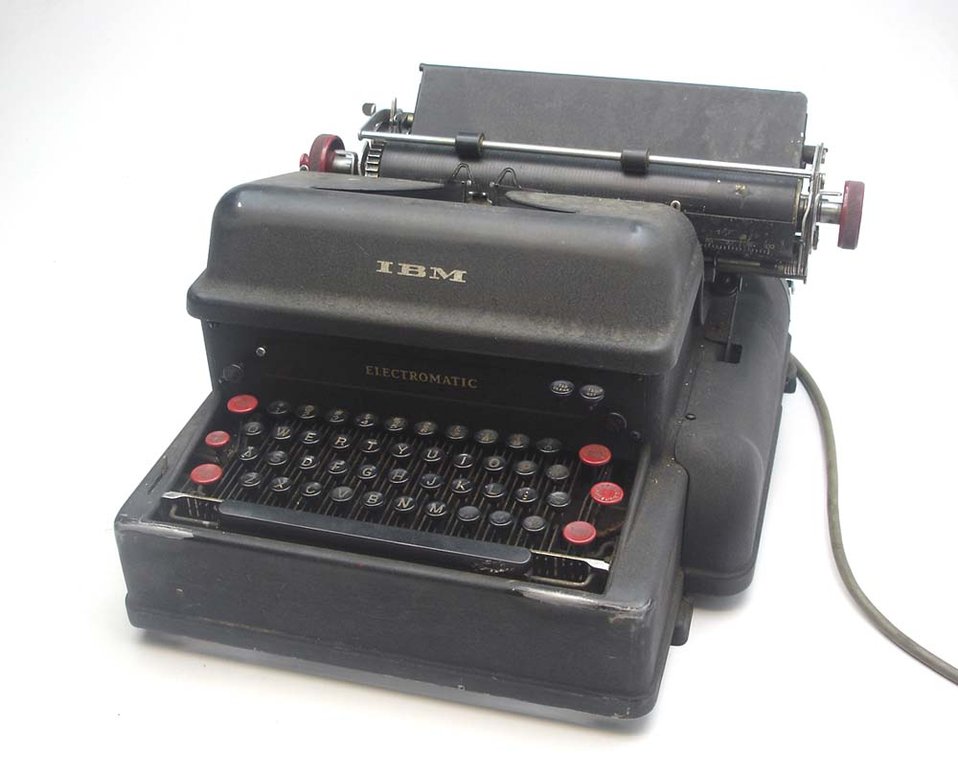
I hope it helps.
A IBM typewriters.